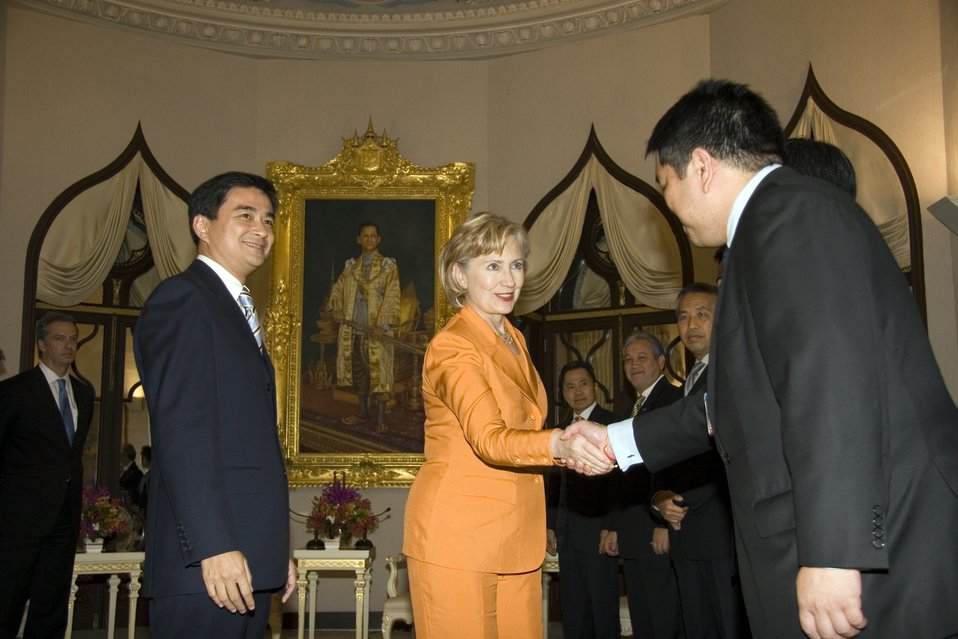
U.S.-Thailand Bilateral Meeting

U.S. Secretary of State Hillary Rodham Clinton shakes hands with Issara Sunthornwat, Deputy Secretary General to the Prime Minister prior to the bilateral meeting at Government House in Bangkok, Thailand July 21, 2009, while Thai Prime Minister Abhisit Vejjajiva looks on.